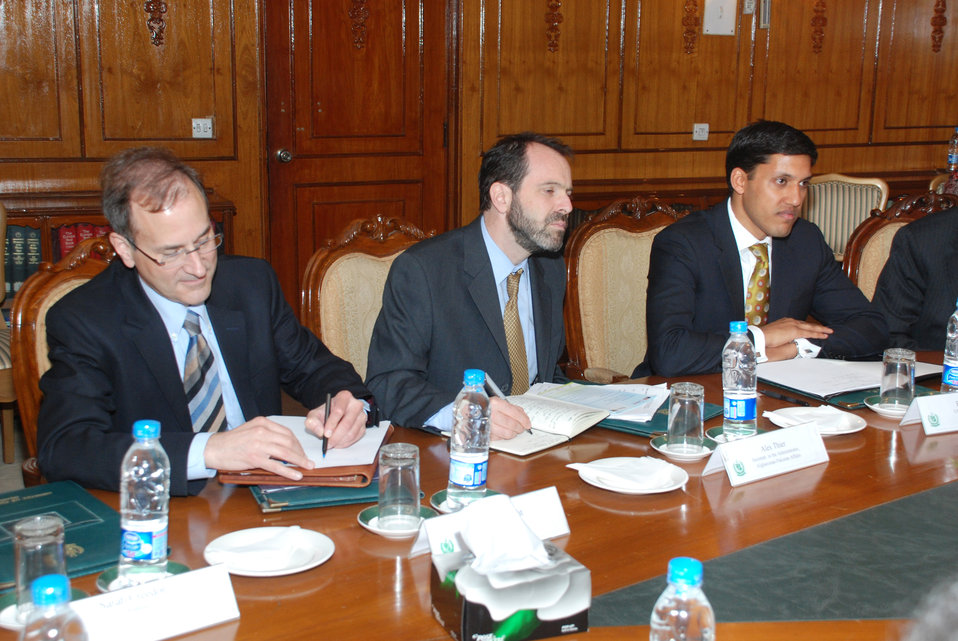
US officials Meeting with Minister of Foreign Affairs, Assistance to Pakistan Remains Strong at Islamabad on April 14, 2012